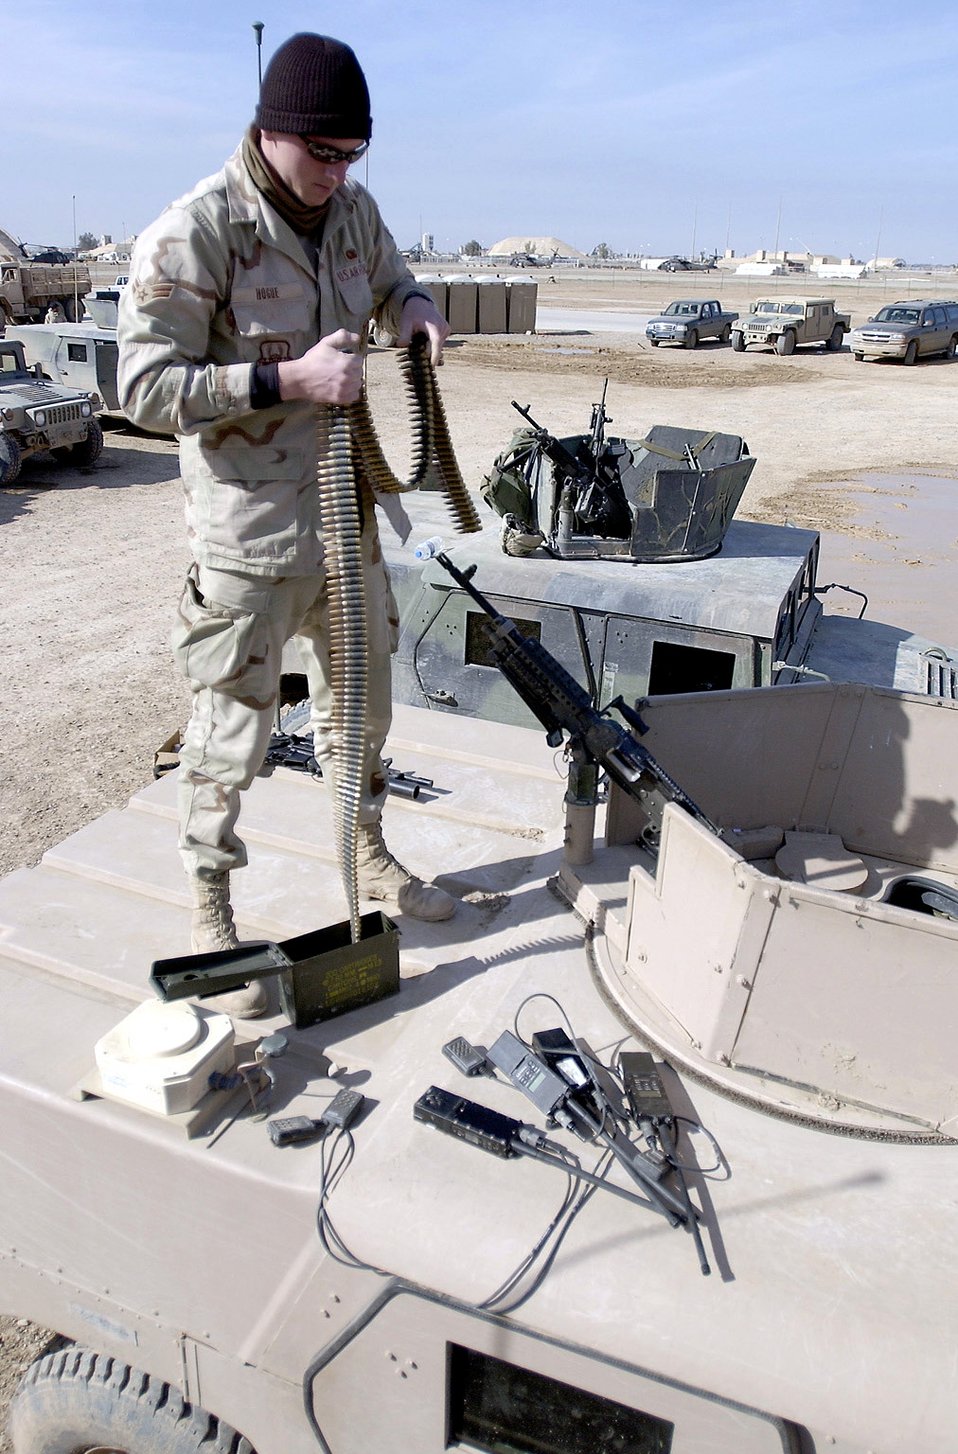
Airmen track terrorists offbase

BALAD AIR BASE, Iraq -- Airman 1st Class Andrew Hose inspects rounds before he and other Task Force 1041 Airmen go on an off-base patrol.